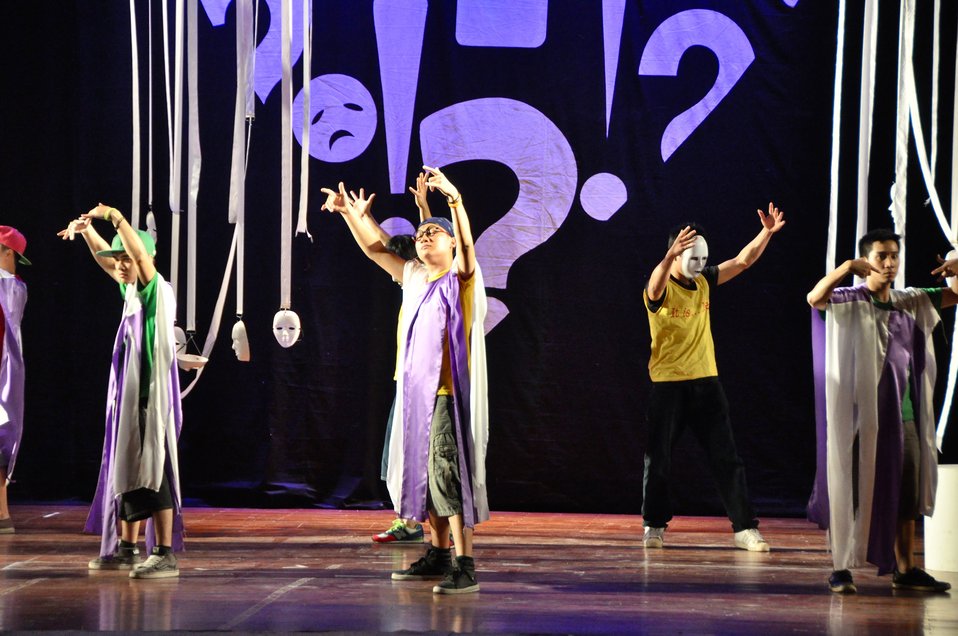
PEPFAR Musical Questions and Exclamations

Hanoi, May 17, 2013